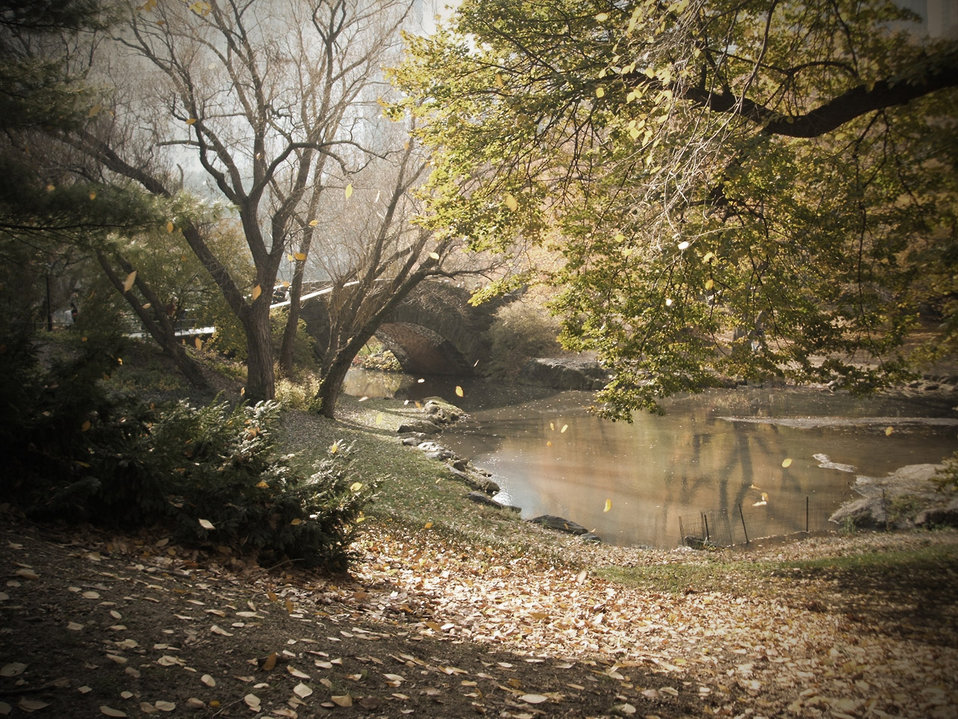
Central park.